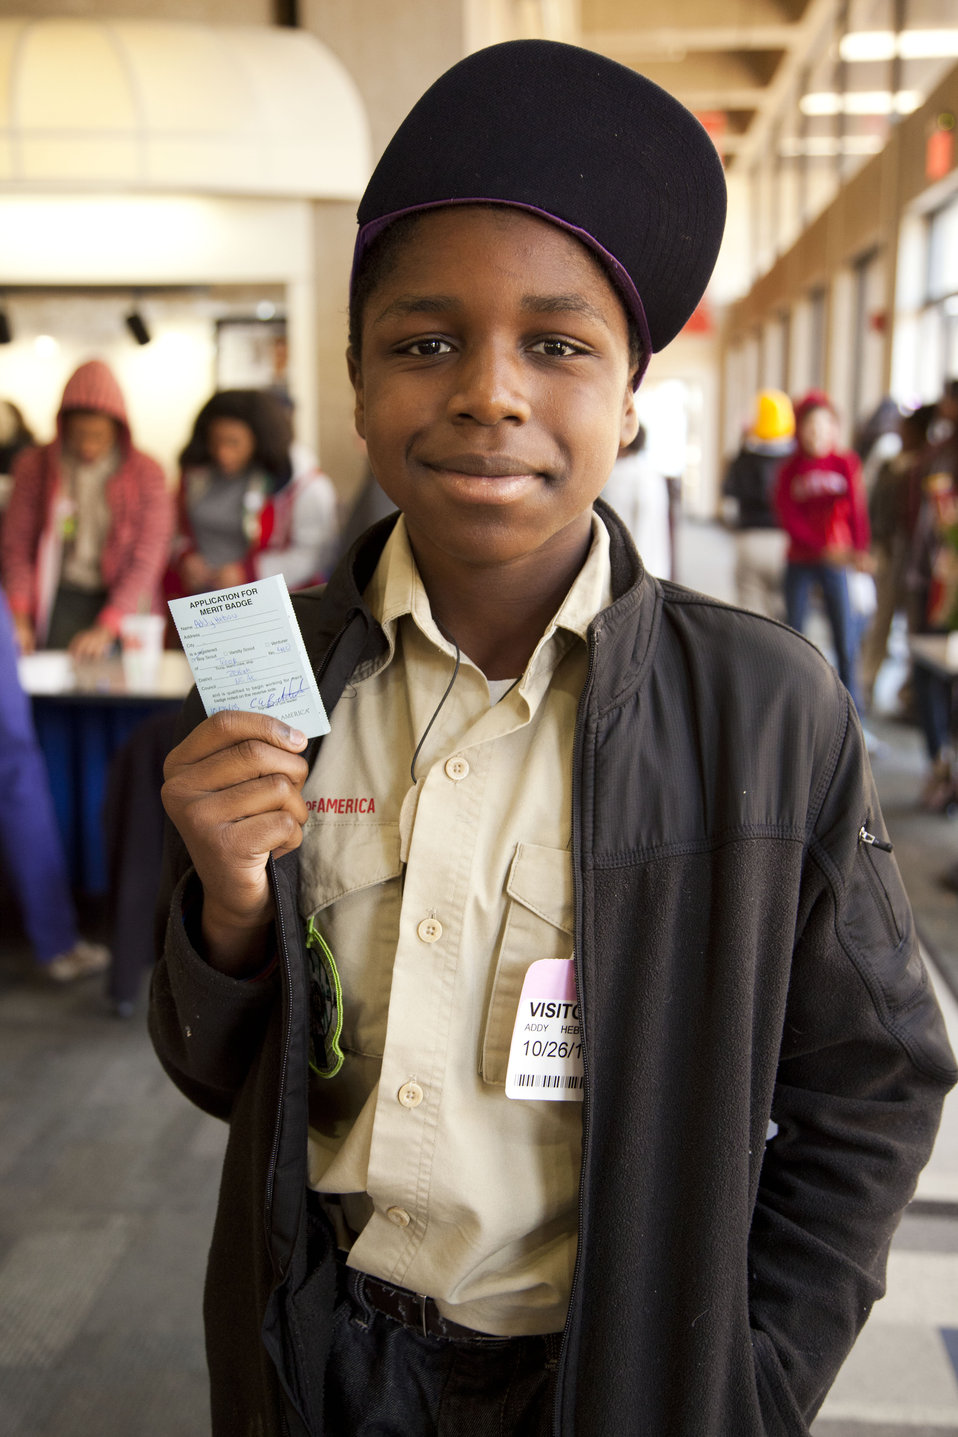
A Boy Scout displays his Merit Badge Application, or “blue card,” after attending the Energy Action Month event.